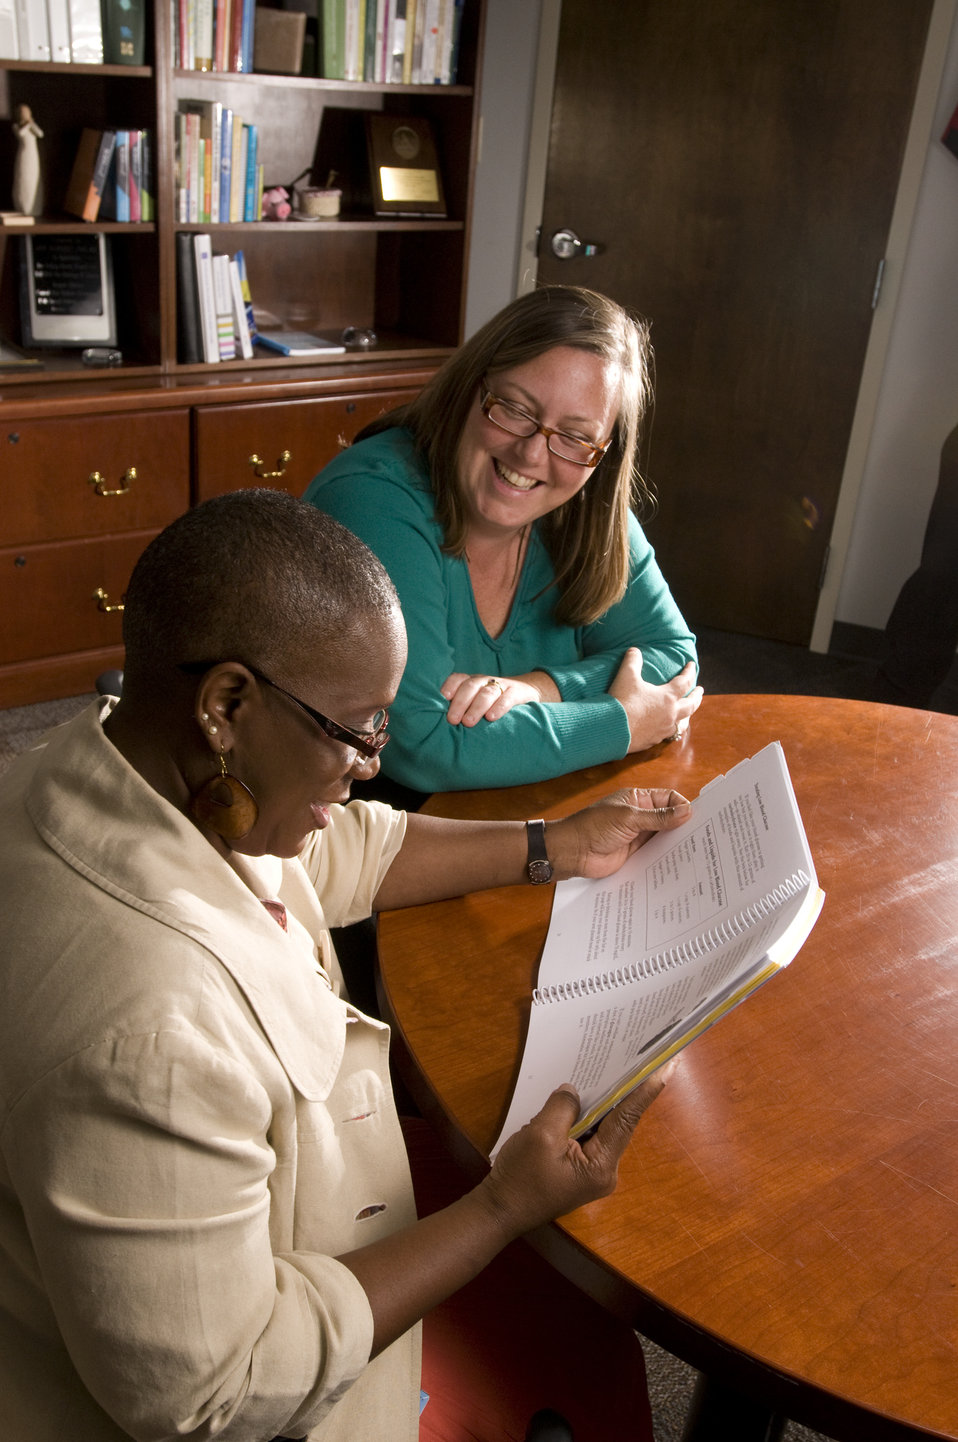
This image depicts a person with diabetes in the foreground listening to a community health worker familiar with the necessary proactive approach one must implement in order to maintain control over the detrimental effects of this disease. The health worker was providing answers to questions posed by the patient regarding actions she'd need to take, enabling her to lead a healthy, active life with diabetes.